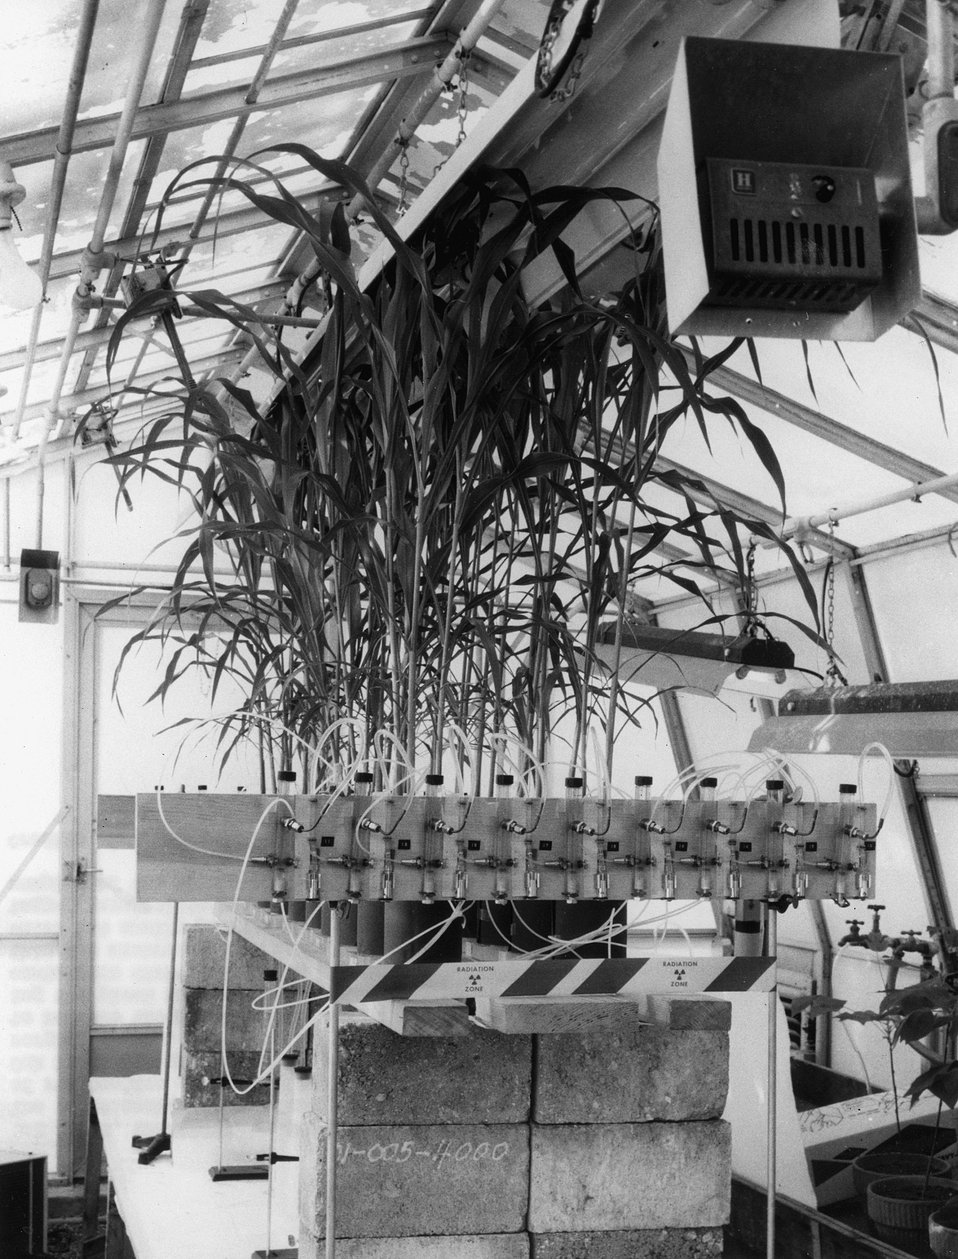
The relationship of moisture in soil to the uptake of radioactive cesium-137 is being determined at Oak Ridge National Laboratory in experiments with sorghum plants. c. 1968